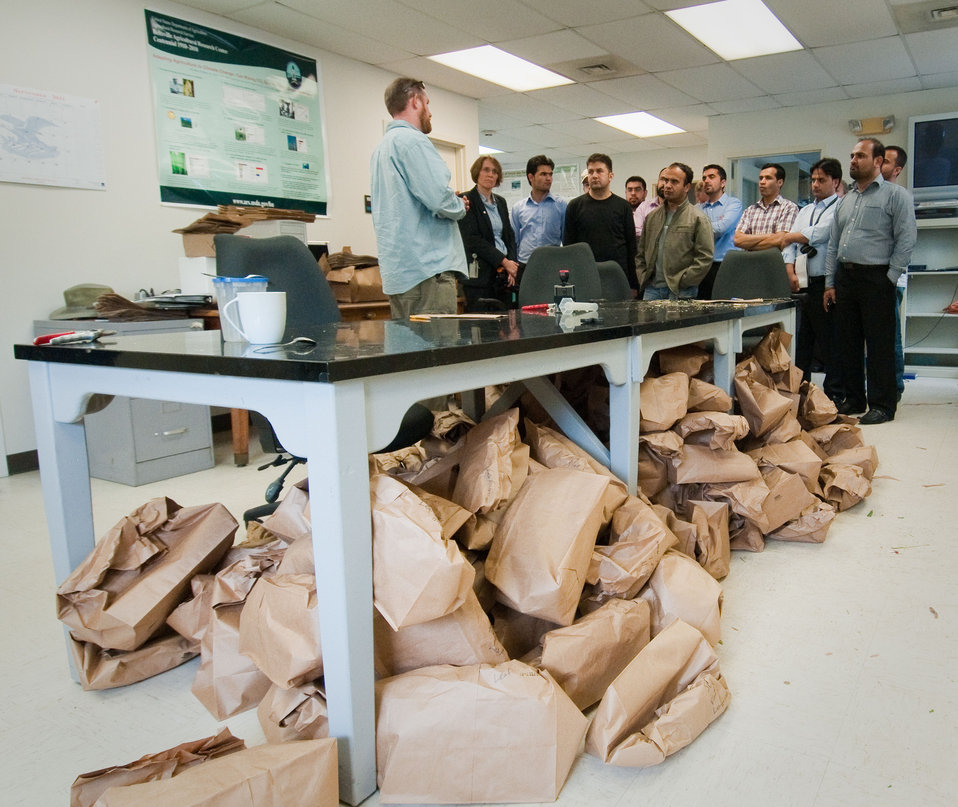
U.S. Department of Agriculture (USDA), Agriculture Research Service's Jackson Fisher (blue shirt), spoke with the Afghan Ministry of Agriculture's Borlaug Fellows about the crop systems, global climate change lab and the Soil Plant Atmosphere Research (SPAR) chambers at the Beltsville Agricultural Research Center, in Beltsville, MD on Wednesday September 21, 2011. On this day the lab had just harvested samples (in bags under table).